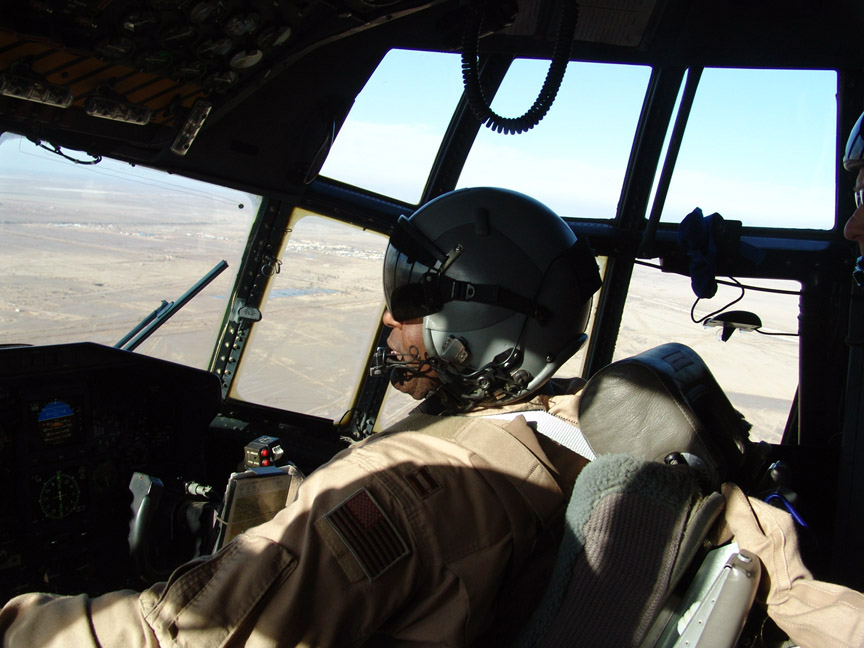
Increased C-130, C-17 flights relieve Army convoys

SOUTHWEST ASIA -- Capt. C.J. Charlton scans his instruments during a C-130 Hercules flight over Iraq. During the past month, Air Force C-130 and C-17 Globemaster III aircraft have increased airlift operations assisting Soldiers in getting needed armored vehicles, repair parts and ammunition to troops in Iraq. Captain Charlton is from the 746th Expeditionary Airlift Squadron.